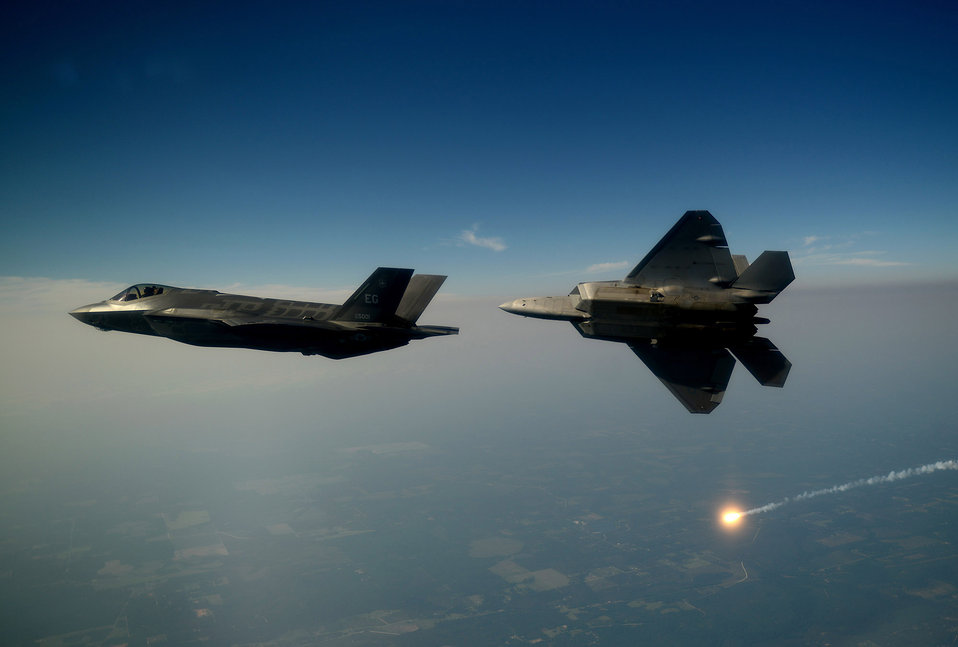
F-35A

An F-35A Lightning II joint strike fighter from the 33rd Fighter Wing at Eglin Air Force Base, Fla., and an F-22A Raptor from the 43rd Fighter Squadron at Tyndall Air Force Base, Fla., soar over the Emerald Coast Sept. 19, 2012. This was the first time the two fifth-generation fighters have flown together for the Air Force.